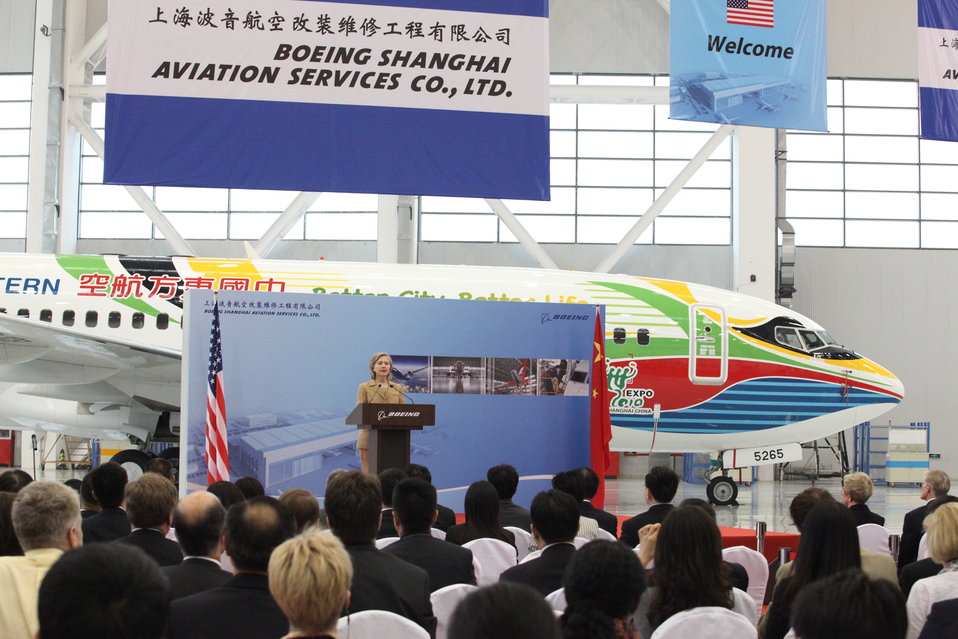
Secretary Clinton Delivers Remarks at Boeing Shanghai Aviation Services

U.S. Secretary of State Hillary Rodham Clinton delivers remarks in support of President Obama’s National Export Initiative at Boeing Shanghai Aviation Services in Shanghai, China, May 23, 2010.